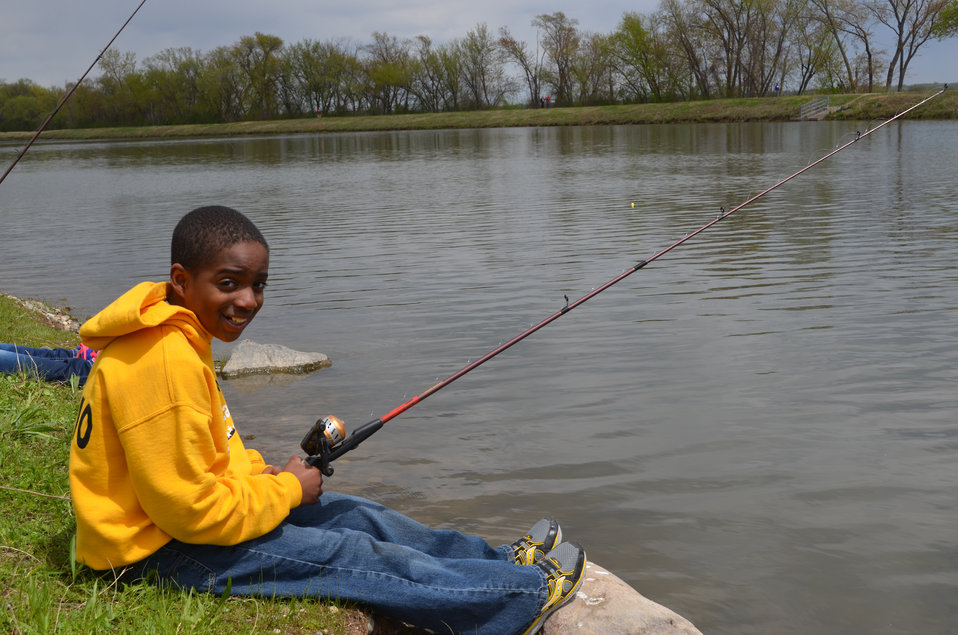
Fishing calls for some lounging